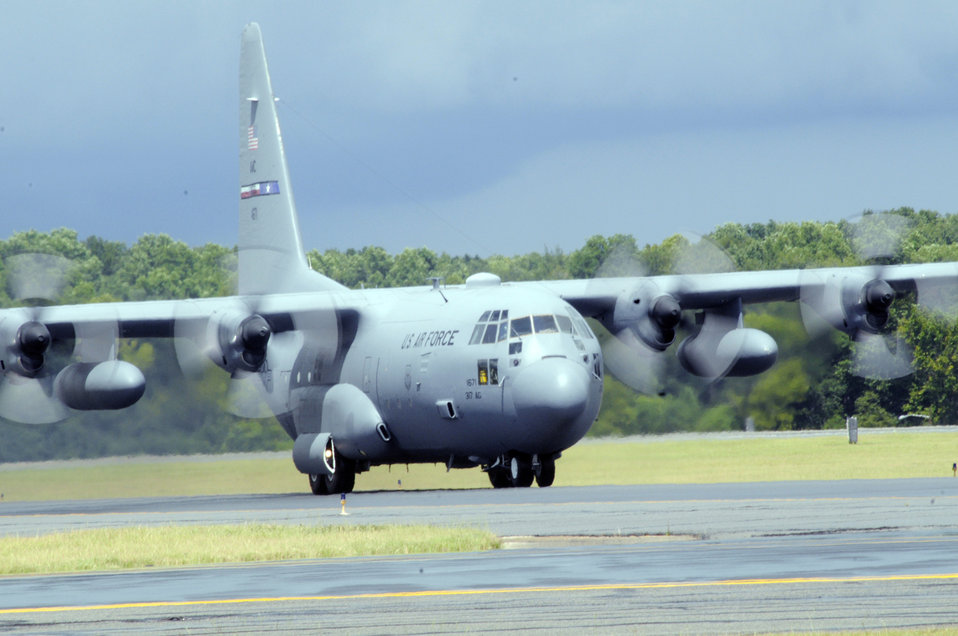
First aircraft undergoes high velocity maintenance at Robins

A C-130 Hercules taxies on the flight line July 31 at Robins Air Force Base, Ga. It will be the first aircraft to undergo high velocity maintenance, the new method of programmed depot maintenance aimed at reducing aircraft downtime.